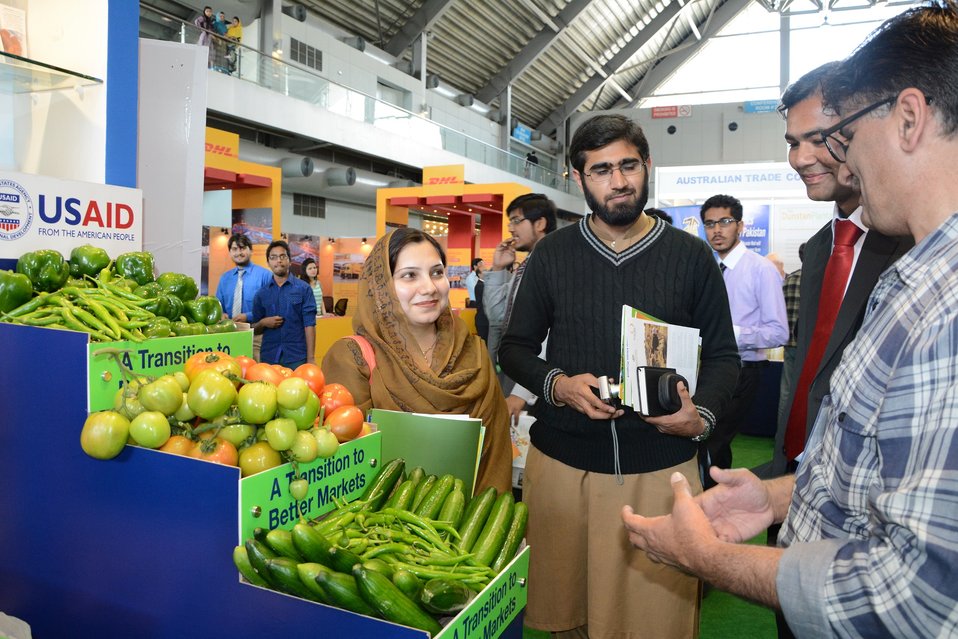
TAP10